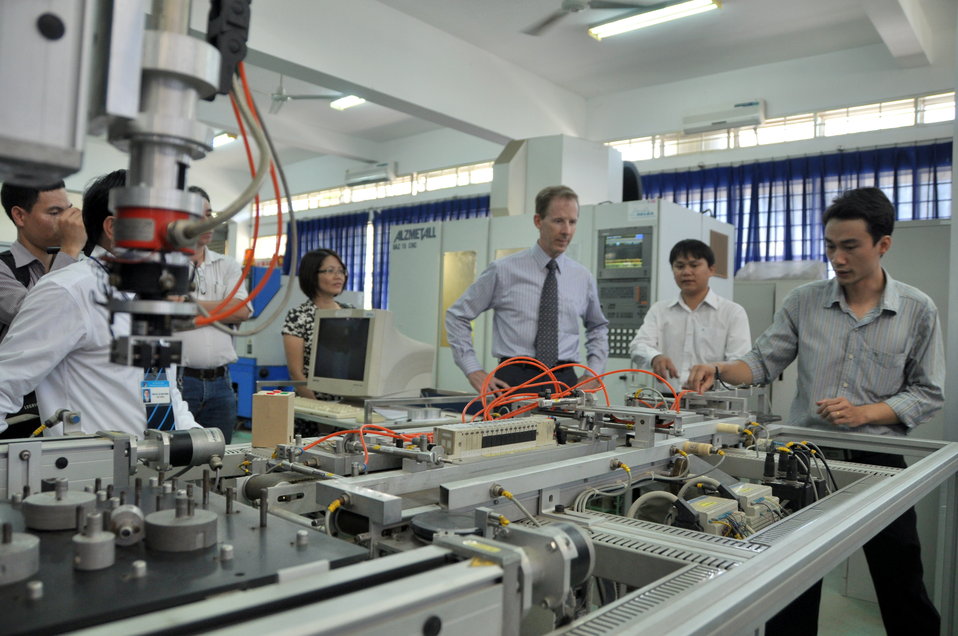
USAID Mission Director visits Danang University of Technology

Danang, July 17, 2013